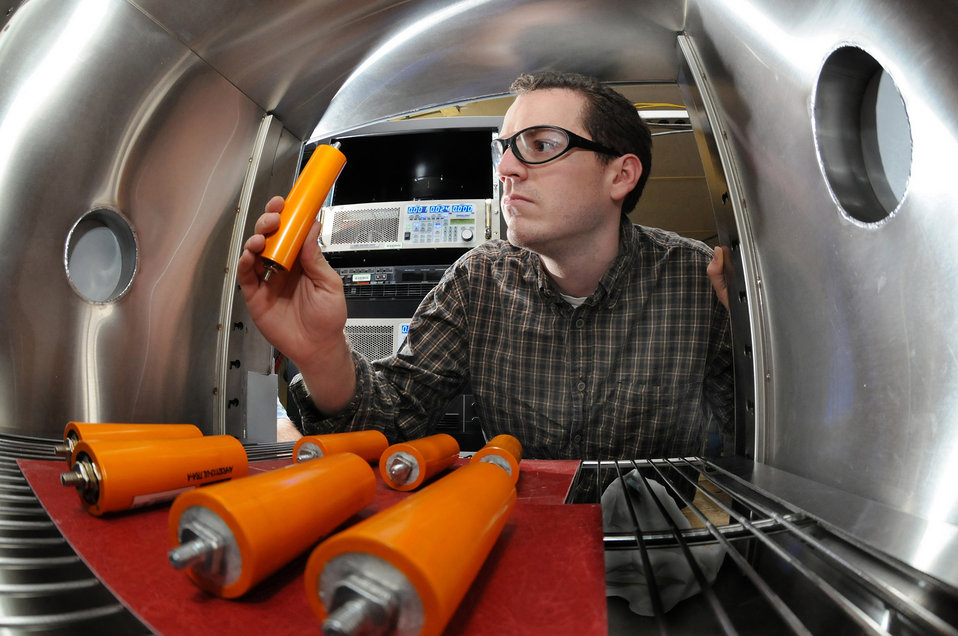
Argonne National Laboratory's Energy Storage Researchers investigate all stages of a battery.
ANL researchers developed cathode technology for a lithium-ion battery so powerful it was selected to be used in the battery for the 2011 Chevy Volt, the first mass-produced plug-in hybrid electric car.